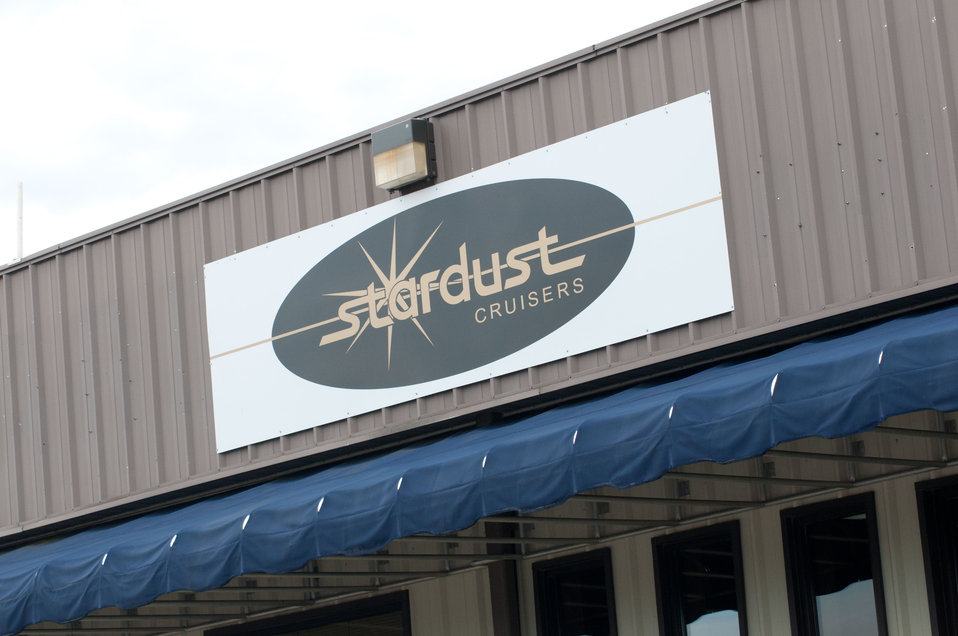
Stardust Industries is helping retool and redirect Kentucky’s houseboat manufacturing industry – which has been decimated because of the struggling economy – by using its facilities and manpower to create low-cost housing that is energy efficient. Rural Development obligated $499,000 in Rural Business Enterprise Grant funds to support this unique endeavor. Up until a few years ago, there were several successful houseboat manufacturers in the four-county area surrounding the city of Somerset. Most have now ceased operation or drastically reduced output, which has led to dramatic, long-term job loss. These new energy efficient homes will be constructed in redesigned, refitted houseboat factories using local workers that have been retrained.